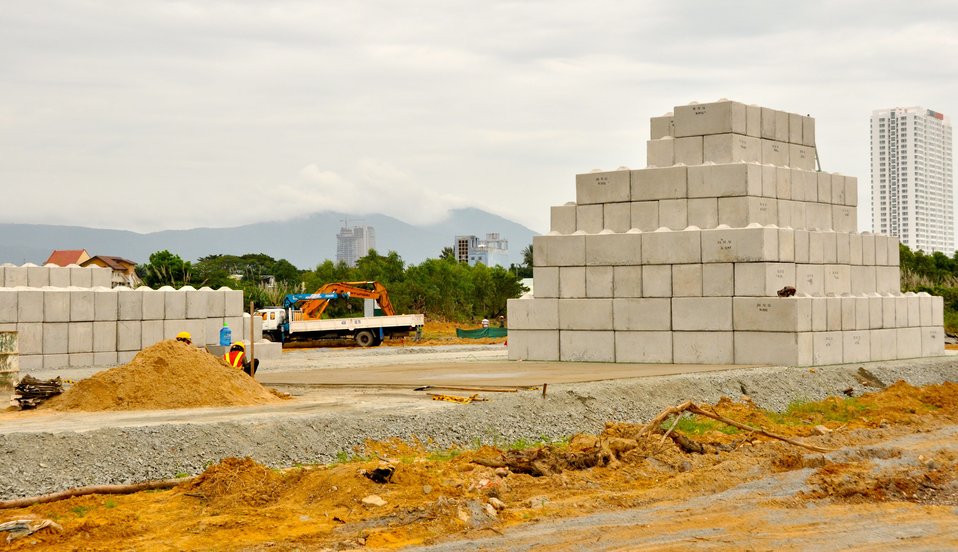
Site Preparation for Environmental Remediation of Dioxin Contamination at Danang Airport

Danang Airport, January 22, 2013